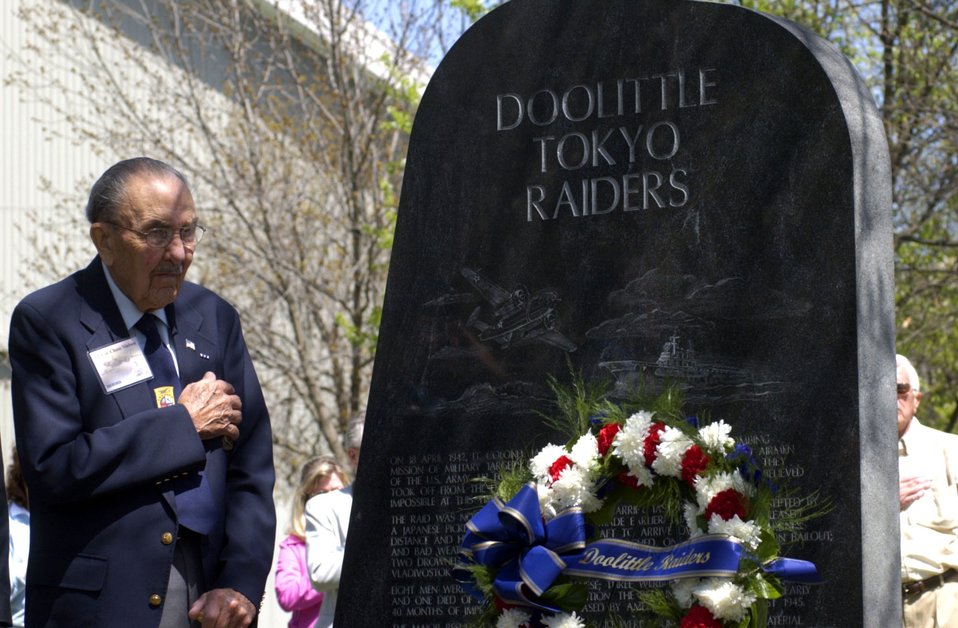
Doolittle Raiders remember fallen comrades

Lt. Col. (Ret.) Chase Nielsen stands for the playing of taps after a wreath was placed near the Doolittle Tokyo Raiders memorial at the National Museum of the U. S. Air Force, DAYTON, Ohio, April 18, 2006. The ceremony was held to recognize the achievements of the Raiders on the 64th anniversary of the mission over Tokyo, Japan.